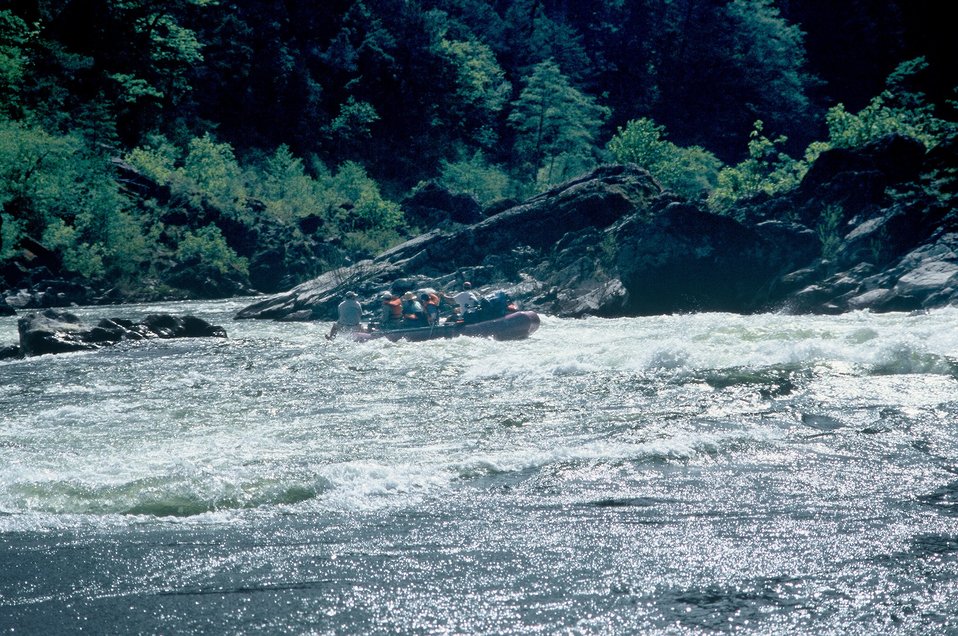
Wild section of the Rogue River from Grave Creek to Foster Bar May 19 to May 22.